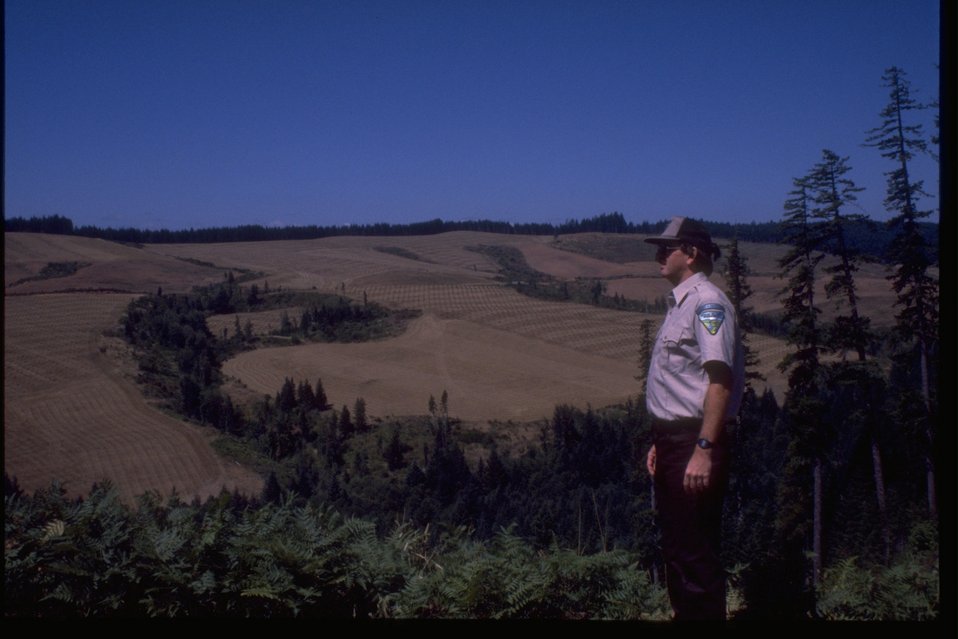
Travis Tyrrell Seed Orchard